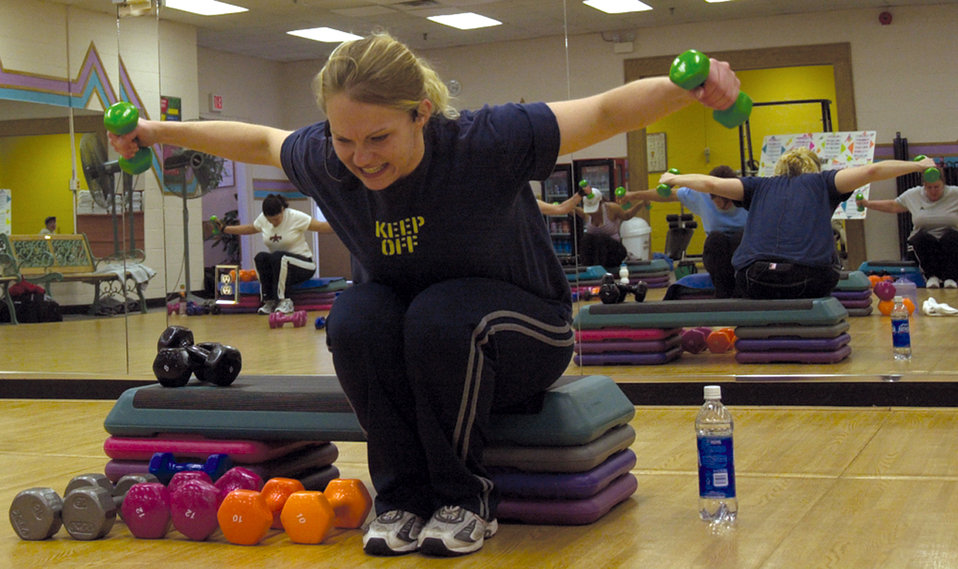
Fitness instructor loses nearly half of herself

SEYMOUR JOHNSON AIR FORCE BASE, N.C. -- Fitness instructor Keyra Donaldson leads one of her classes here. She teaches 25 classes per week, averaging 12 people per class. The classes range from 35 to 90 minutes each and include circuit, abdominal, weight lifting and spinning. Mrs. Donaldson lost 115 pounds since 2000.